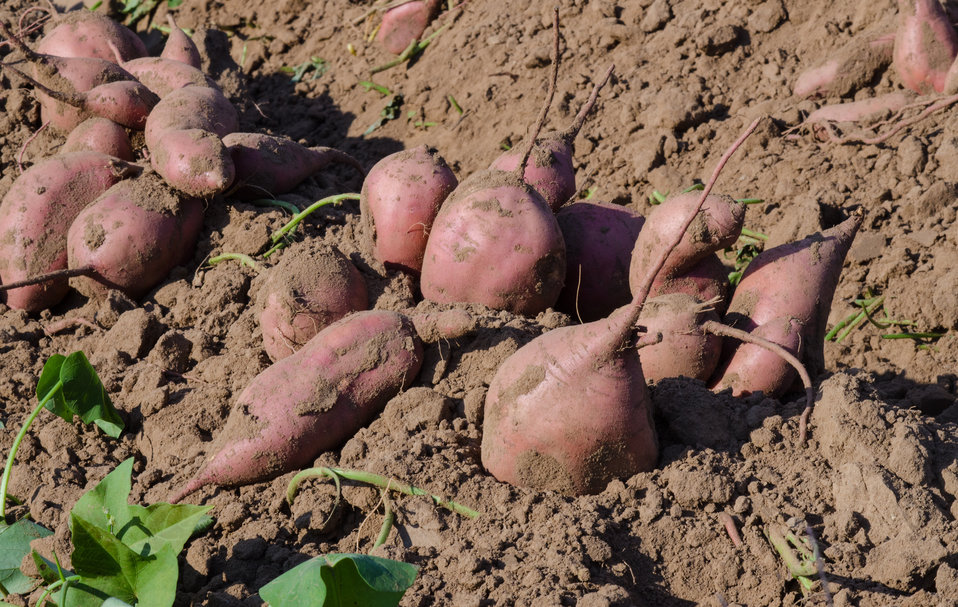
Harvested sweet potatoes are loaded onto a trailer at the Kirby Farms in Mechanicsville, VA on Friday, Sept. 20, 2013. The hand picked potatoes are taken to an onsite-heated warehouse to cure, a process that toughens the skin and brings the sweetness to a level normally expected in markets. Kirby Farms devotes 200 acres v to eggplant, spinach, beets, tomato, jalapeno peppers, melons and a variety of greens. Soybeans and small grain are grown on the remaining 300 acres. Using rotational crop practices allows Kirby Farms to double and triple crop yields. Wholesalers, who buy from this farm, sell the produce to major supermarkets in the Mid-Atlantic region, from North Carolina to Maryland. Restaurants in the local area prepare and serve the local bought produce to patrons in the Richmond, VA metropolitan area.